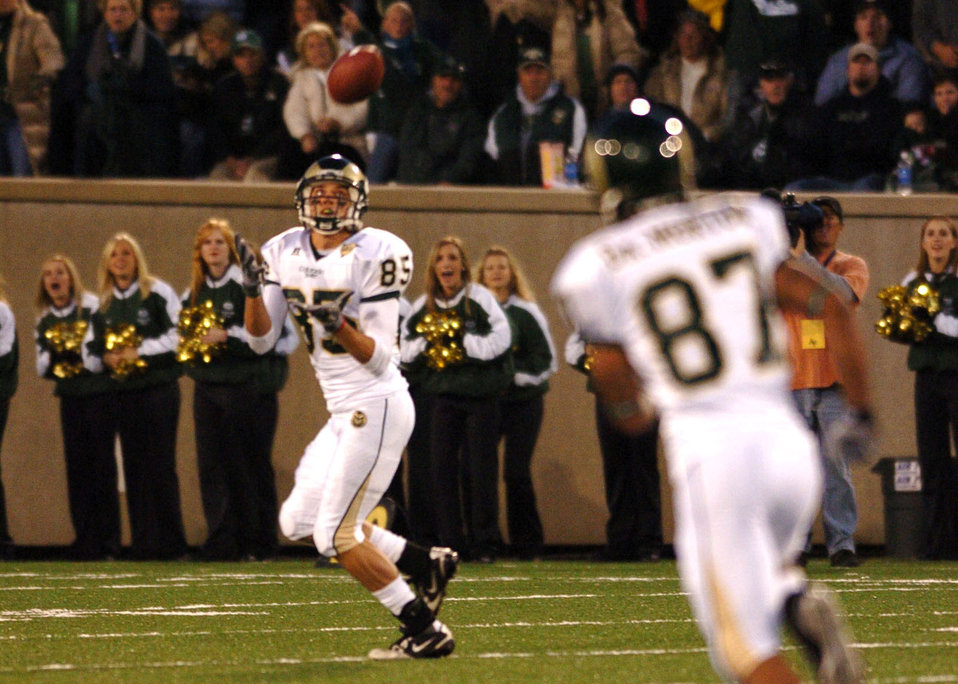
First Blood

Colorado State wide receiver Dustin Osborn draws first blood against Air Force Thursday night by catching a 60-yard touchdown pass from CSU quarterback Caleb Hanie. Despite leading Air Force 21-3 at halftime, CSU was unable to prevent 21 unanswered points from Air Force in the second half. Air Force won, 24-21.